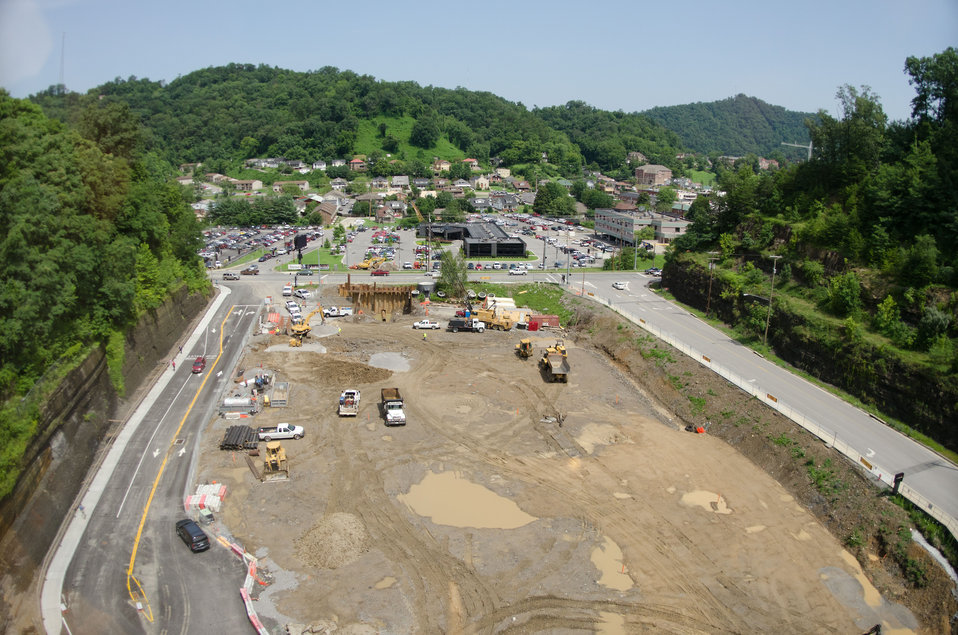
From the Pikeville Medical Center building, a portion of the U-shaped town of Pikeville can be seen beyond the above ground construction phase (foreground) of the Pikeville Medical Center (PMC) expansion project, on Tuesday, July 12, 2011, in Pikeville, KY. Some of the property has been cut into the mountainside. The construction area is where the parking garage will be; eliminating the long walk patients have to overcome to get from the current parking lot to the main medical center. After months of infrastructure construction and rain delays, one of Kentucky’s largest American Recovery and Reinvestment Act (ARRA) projects is under way. The $44.6 million Community Facilities Loan will finance construction of a new medical office building and parking garage. The new medical office building will house outpatient surgery, endoscopy and surgical support and provide exam, waiting and office space for 23 primary and specialty care physicians. It also will contain a medical research center to support existing research – in conjunction with Pikeville College – on health disparities, genetic research related to the prevalence of cancer and other areas, including drug and treatment trials. The new seven-floor parking garage with more than 1,000 spaces will be built adjacent to the new medical building. This will eliminate the need to shuttle patients back and forth from remote parking areas, as the center’s current parking areas are filled to capacity on a daily basis. The new garage will provide closer and easier proximity to medical and hospital services for all patients.
Wayne Rutherford, County Judge-Executive for Pike County, says funding from ARRA is a boon for his county because it will create jobs.
“This is great for Pike County’s economy. We know we have a great hospital, and with this support, it will be even better,” said Rutherford. “The unemployment rate here is above the state average and this will stimulate jobs. There will be construction, which means lots of jobs on the front end – and even more once it is built.”

Pike County is one of Kentucky’s persistent poverty counties and the current medical facility provides health care services for a rural population of more than 68,000. This project will create 1,430 direct and indirect construction jobs, in addition to 97 long-term jobs. It is scheduled to be completed in December 2012.

“This project is a prime example of the ARRA monies being utilized for much-needed health care facility expansion in an economically-depressed region of Eastern Kentucky and Appalachia,” said Tom Fern, State Director for Rural Development in Kentucky. “This hospital has received national recognition for its quality of care, and this money will allow them to expand and build upon their success and continue providing quality health care services to the region.”
PMC was named National Hospital of the Year by the American Alliance of Healthcare Providers in November 2009. The hospital was among 400 elite health care facilities to apply for this prestigious honor. To earn this recognition, PMC competed against more than 400 hospitals, including the Mayo Clinic, the John Hopkins Hospital, Cedar-Sinai Medical Center, the Cleveland Clinic, Duke University Medical Center and Vanderbilt University.
Pikeville City Manager Donovan Blackburn said the medical center is the largest employer in Pikeville and contributes nearly $2 million to the city through the payment of occupational taxes. He went on to say that Pikeville Medical’s success is also the city’s success because as other cities struggle with dwindling revenues, Pikeville has actually seen growth.
“This is a regional medical center that is very important to the city. Pikeville is a legal, financial and education hub for Eastern Kentucky and a gateway to rural communities in Virginia and West Virginia. There are half a million within a 50-mile radius – so it’s not just local people that depend on this facility,” said Blackburn. “From a regional standpoint it adds volume from a jobs standpoint. Everybody in this county knows someone or has family that works for Pikeville Medical Center.
“People in this area used to have to go out of the area for good jobs and quality medical services, but Pikeville Medical has changed that,” added Blackburn. 'And it has impact on other parts of the city’s economy – hotels, restaurants and retail. It increases the quality of life tenfold.”

The Recovery Act was designed to spend money gradually over time in order to sustain a true recovery – with peak spending to occur early this year. While the experts agree that ARRA is already responsible for creating or saving approximately two million jobs, about 75 percent of recipients that reported on their Recover Act spending indicated their projects are less than half complete, meaning there is even more job impact from those dollars to come.